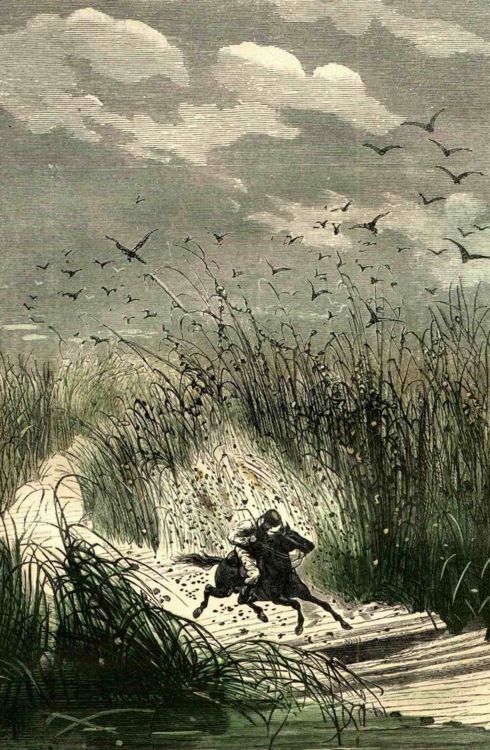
An illustration from the novel 'Michael Strogoff: The Courier of the Czar' by Jules Verne drawn by Jules F√©rat. Polski: Ilustracja powie≈õci Juliusza Verne'a 'Micha≈Ç Strogow, kurier carski' autorstwa Julesa F√©rata. Fran√ßais†: 'Michel Strogoff. Le courier du tzar', Jules F√©rat. Fran√ßais†: Le cheval, taonn√© par ces venimeux dipt√®res.